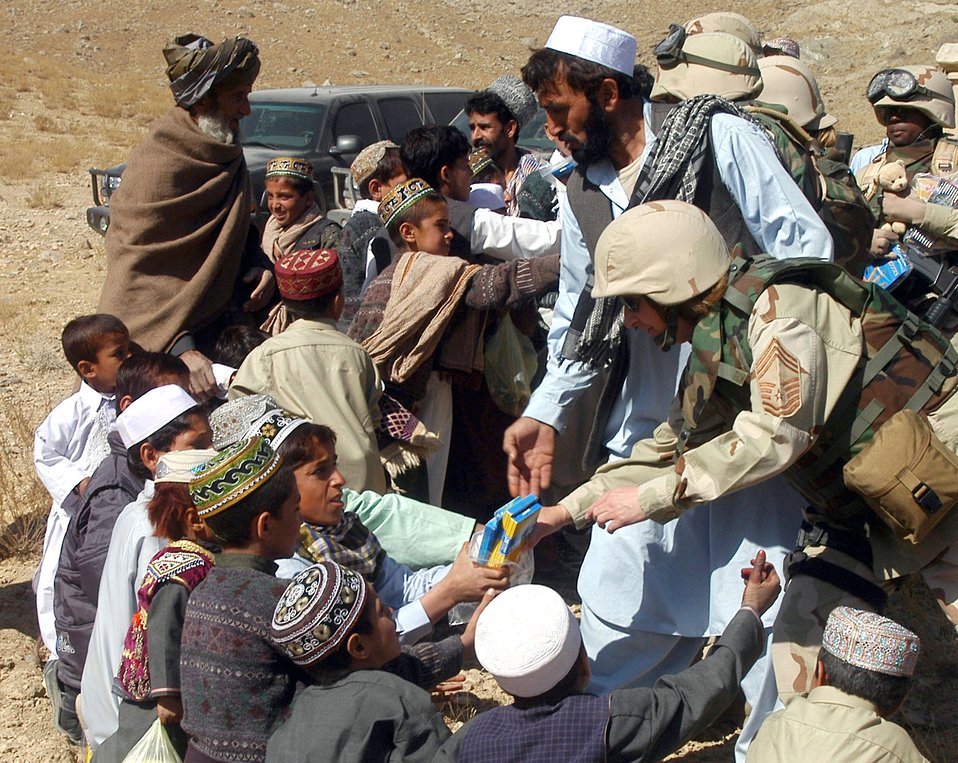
Handing out school supplies

PARWAN PROVINCE, Afghanistan -- Chief Master Sgt. Debra Ballentine and others help distribute school supplies during an adopt-a-village visit here. The Chief is deployed to Bagram Air Base from Travis Air Force Base, Calif.